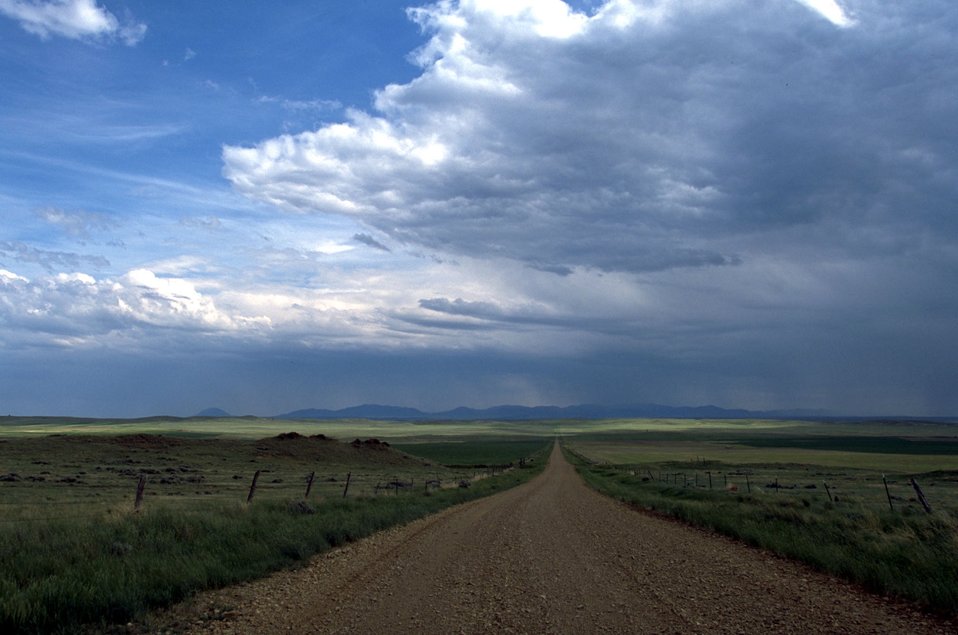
Storm clouds moving onto the prairie